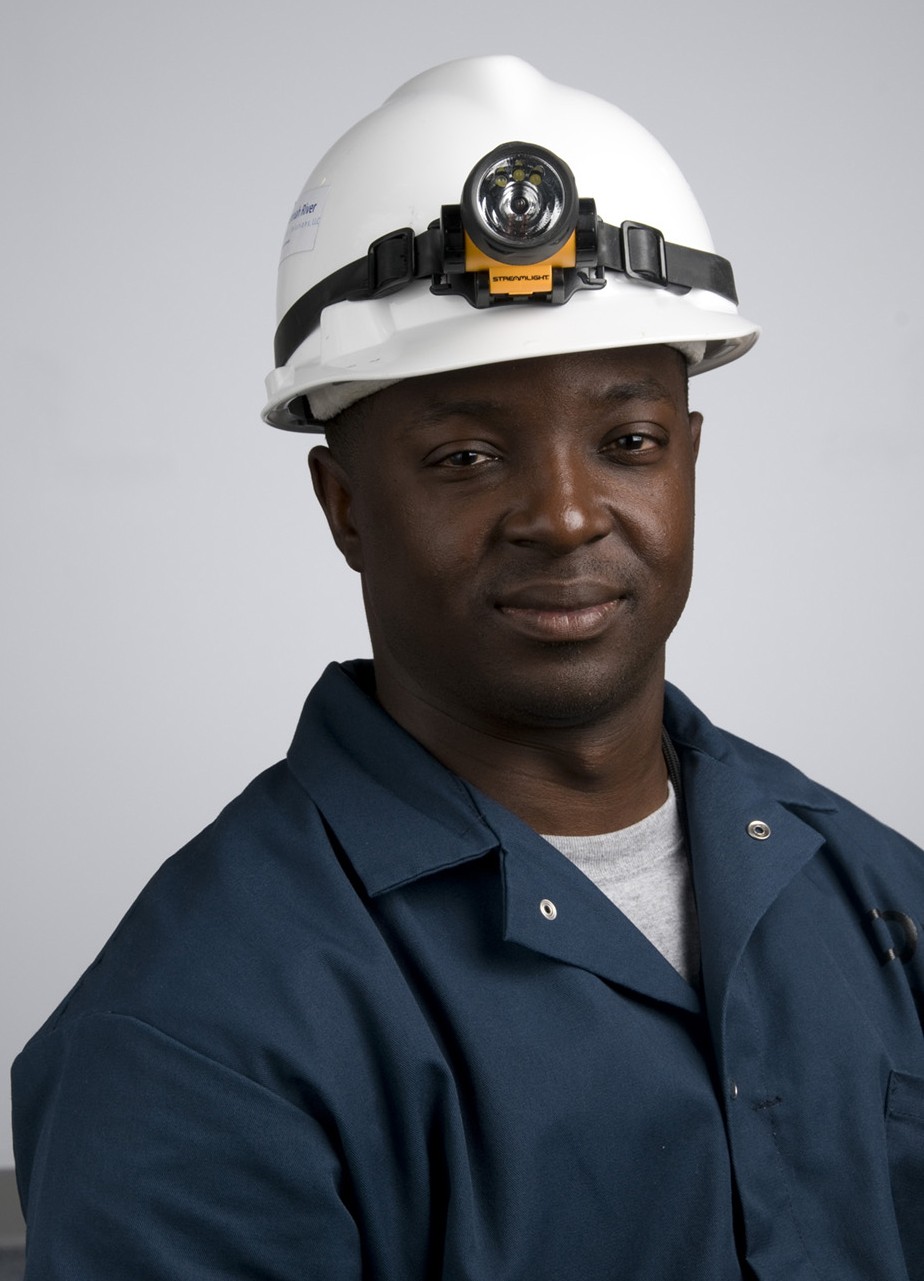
Jamie Bing is a new hire at the Savannah River Site.